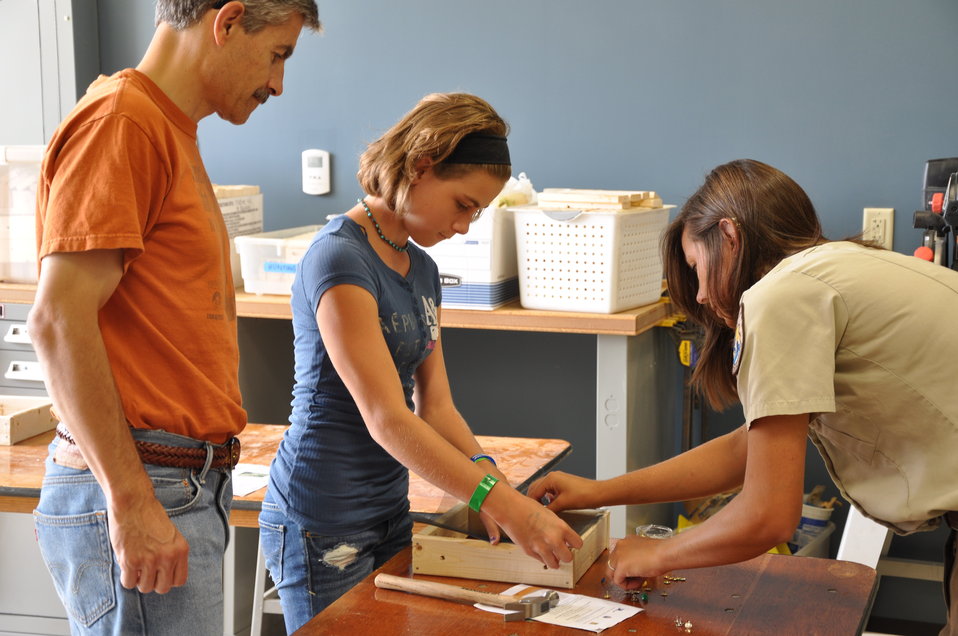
Building bird feeders